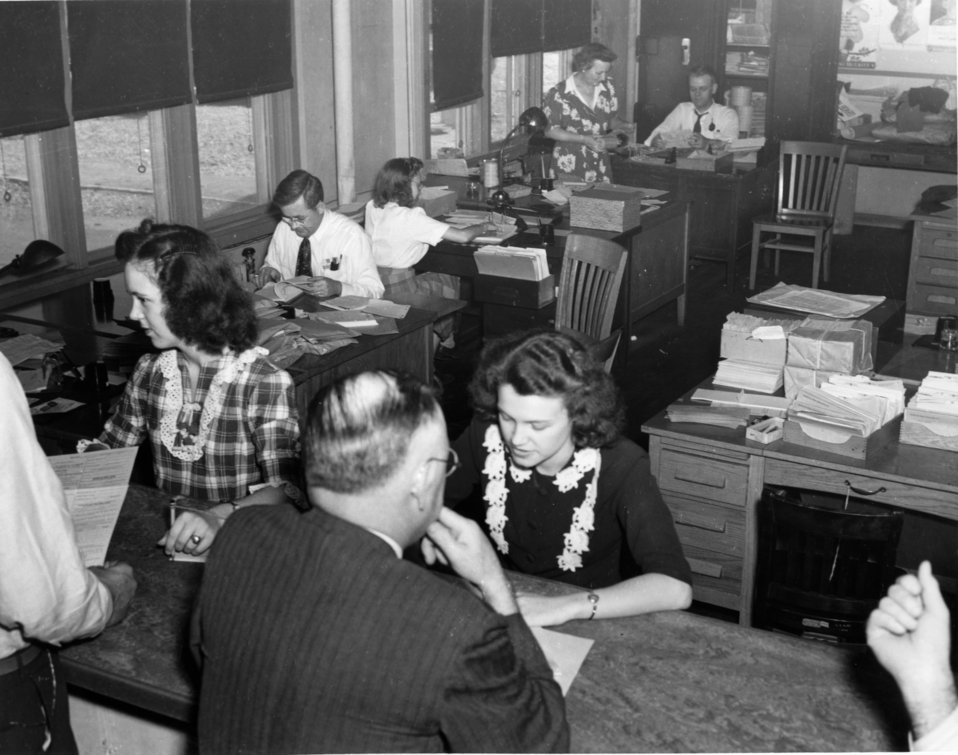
Services at Oak Ridge